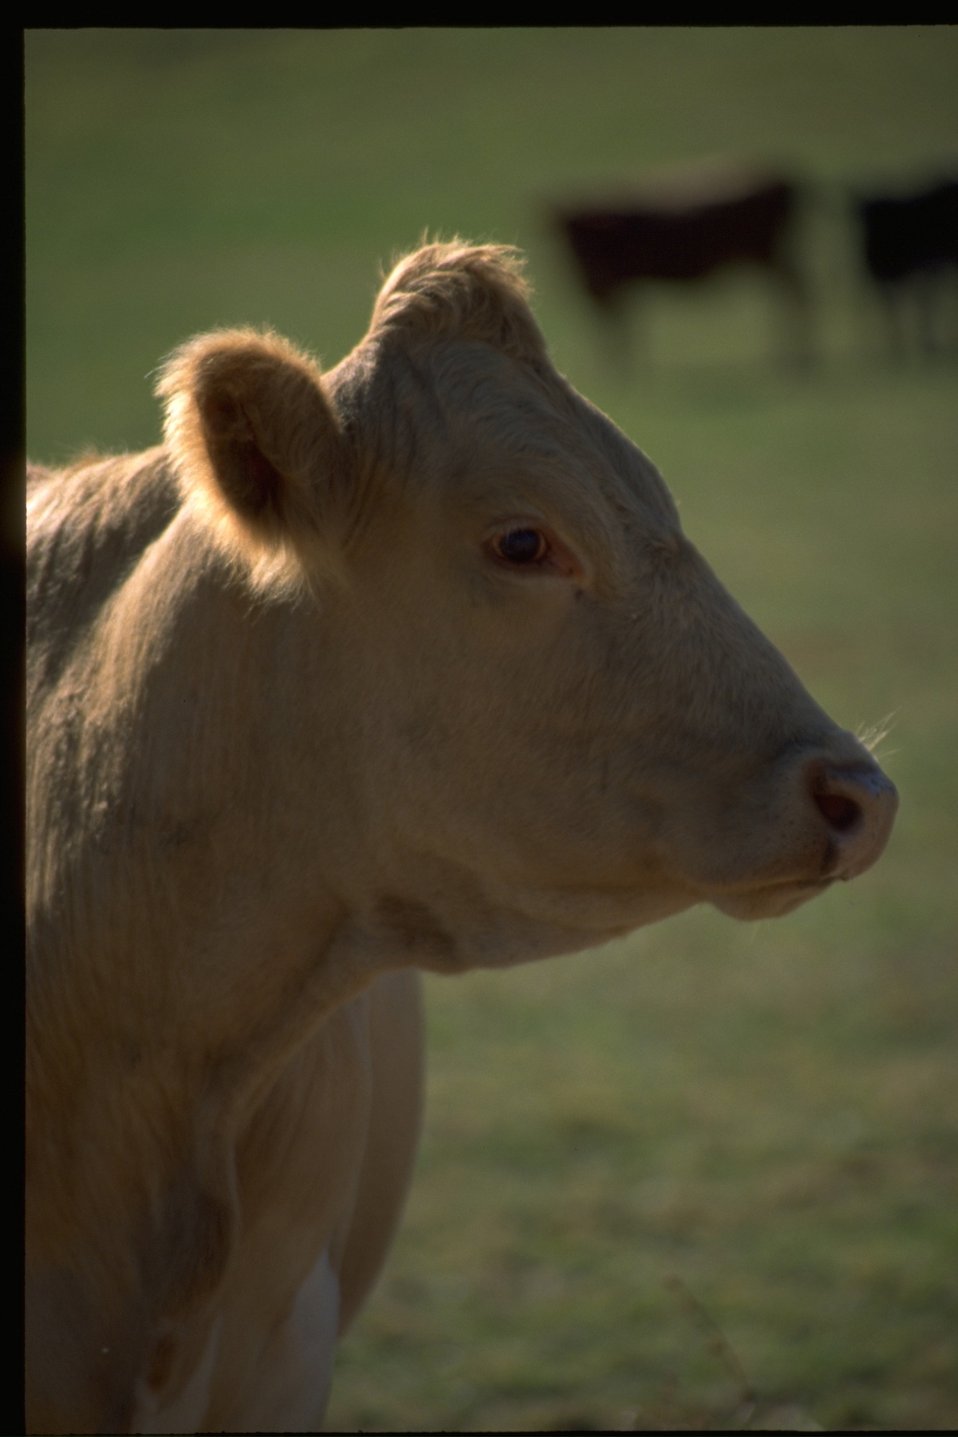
Cow in private pasture near section 2 of the John Day River.